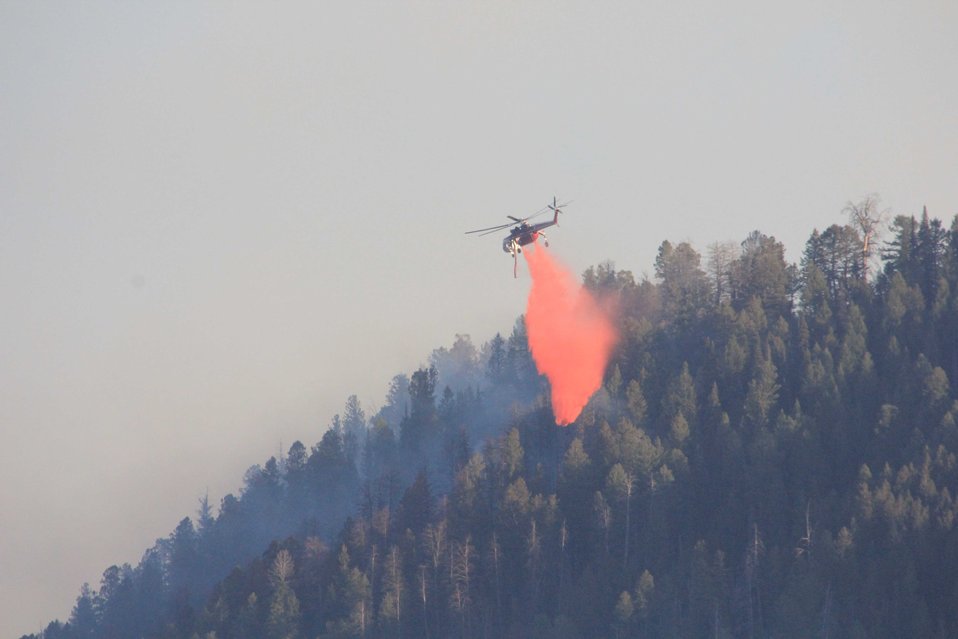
Making a Drop

With the retardant mixing plant so close to the fire's location, pilots had a very efficient turnaround time from when they picked up a load of retardant, flew to the designated location, dropped the load, and returned for more.

This photo was taken from the refuge administrative office complex, showing the proximity of the fire to the refuge headquarters.

Credit: USFWS / Tony Hough, National Elk Refuge volunteer